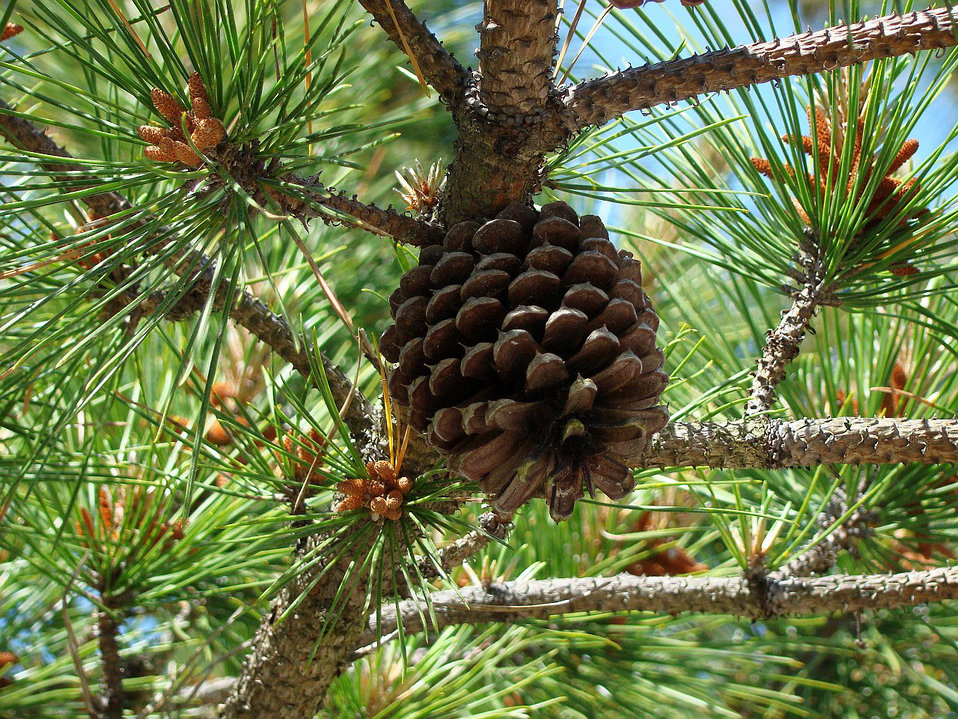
Cone

Coniferous tree blooming.